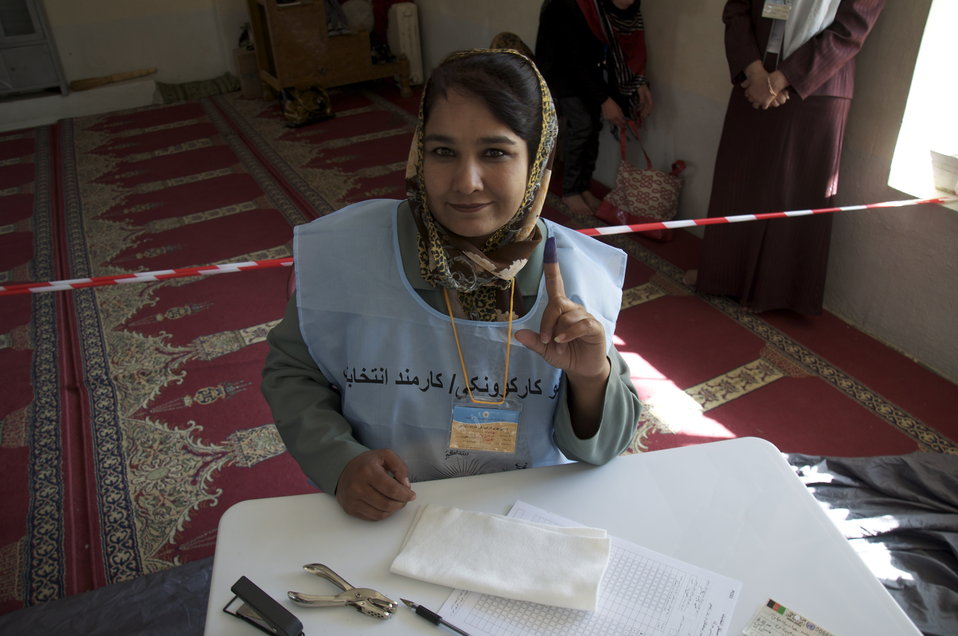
Voter